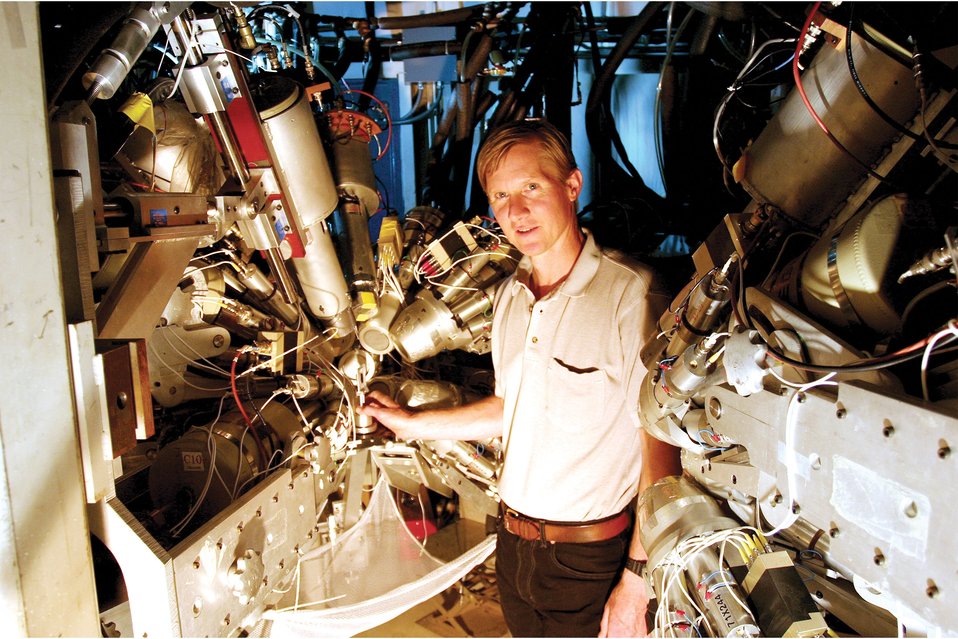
PICTURED IS THE CENTER OF THE GERMANIUM ARRAY FOR NEUTRON-INDUCED EXCITATIONS (GEANIE) AT THE LOS ALAMOS NEUTRON SCIENCE CENTER (LANSCE).